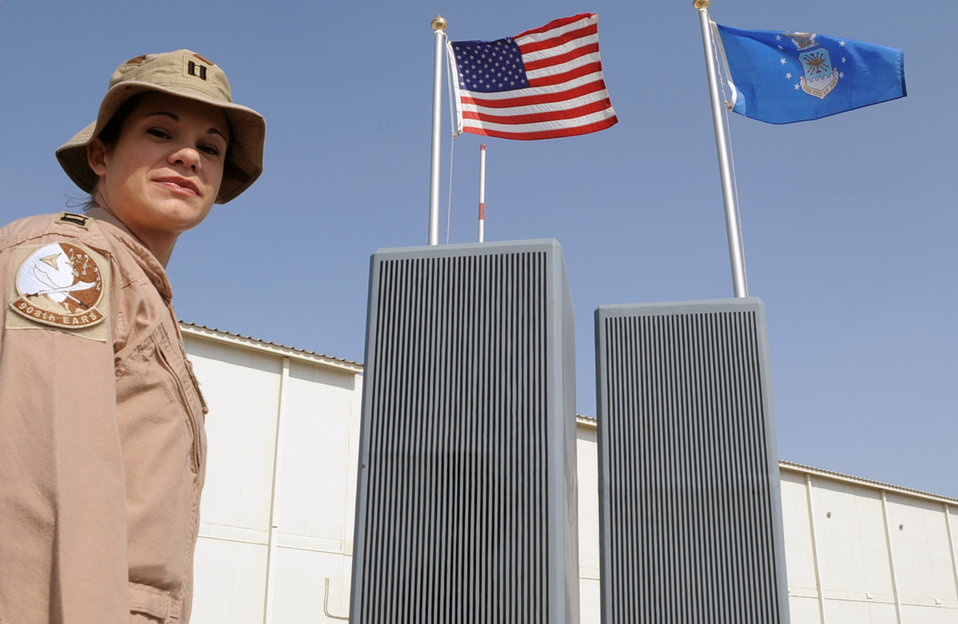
KC-10 pilot

Capt. Hillary Wykes, a KC-10 Extender pilot with the 380th Air Expeditionary Wing's 908th Expeditionary Air Refueling Squadron at an air base in Southwest Asia, stands by the base's 9/11 memorial. Captain Wykes is deployed from the 9th Air Refueling Squadron at Travis Air Force Base, Calif., and her hometown is Plano, Ill.